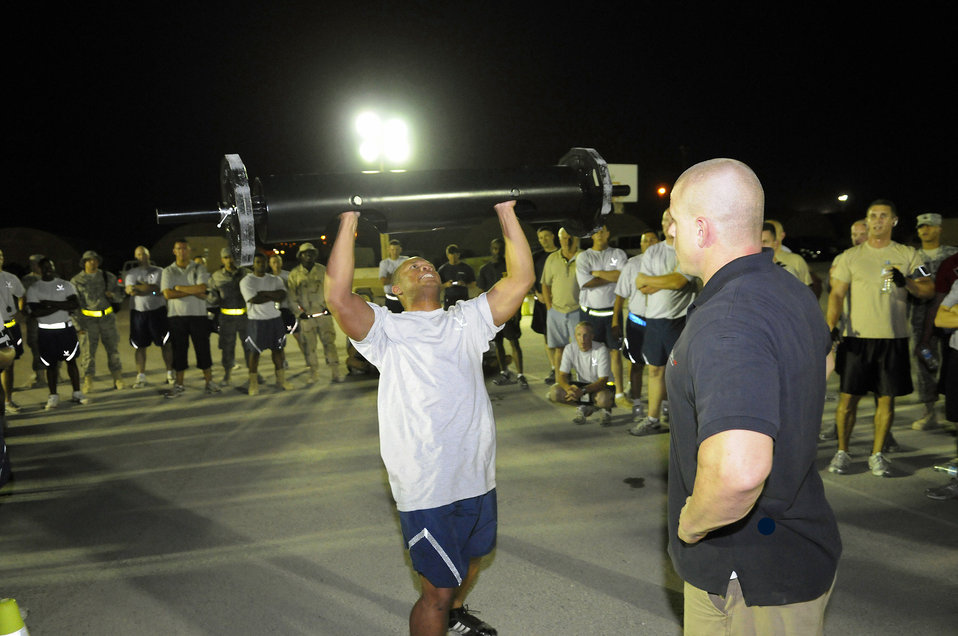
Airmen show true grit in Strongman competition

Senior Airman Nathaniel Mahoney presses the